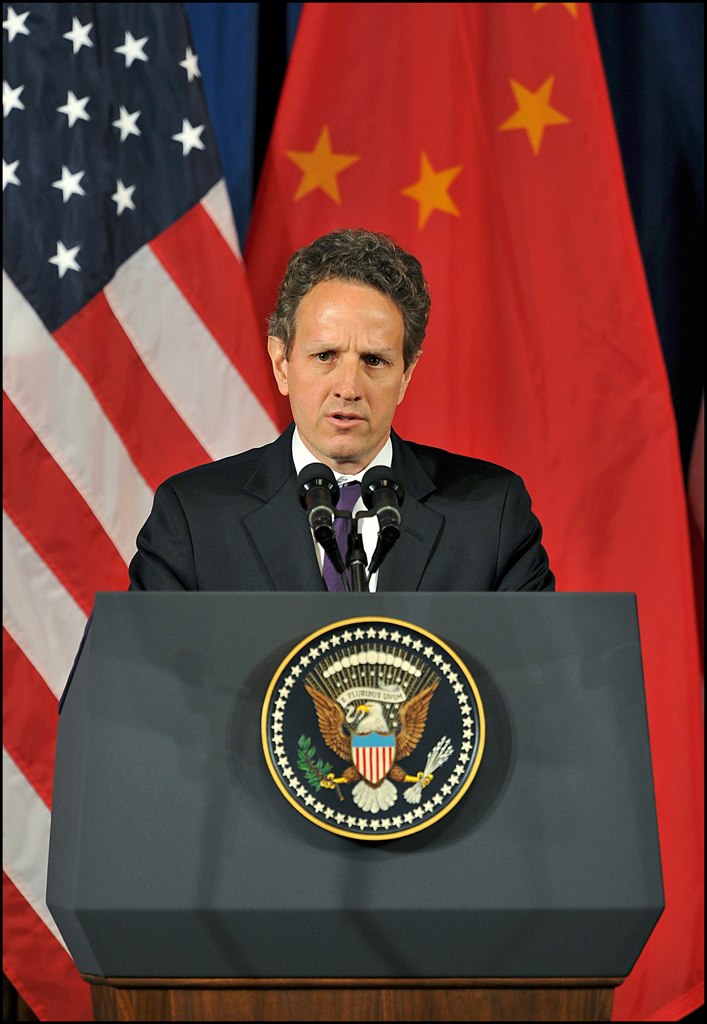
U.S.-China Strategic and Economic Dialogue